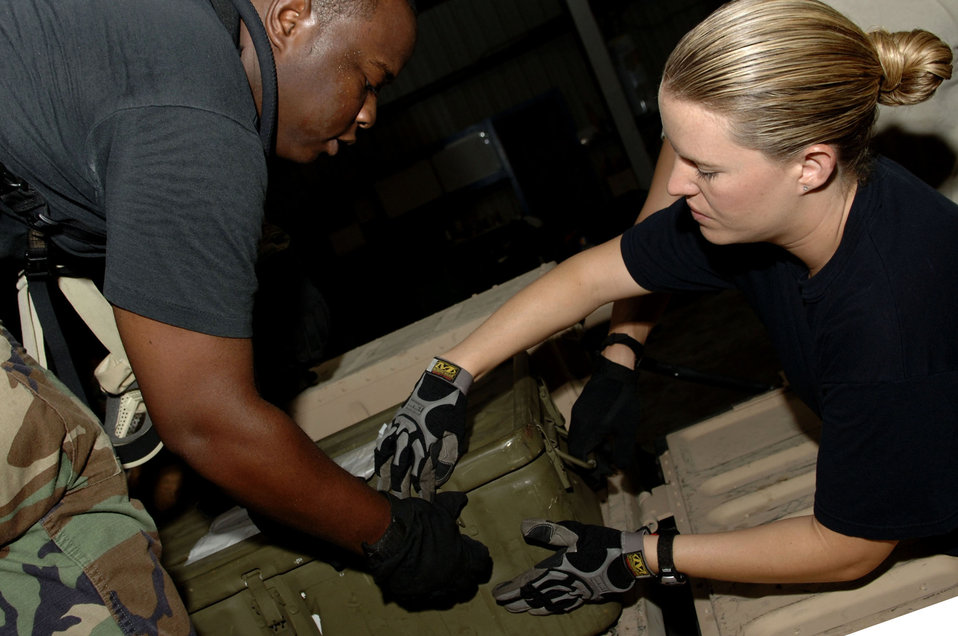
MacDill AFB medical team supports hurricane relief efforts

Senior Airman Kenneth Alexander (left) and Staff Sgt. Christine Davis unload medical supplies from a Humvee at Corpus Christi, Texas. The mobile aeromedical staging facility team deployed to Texas in support of Hurricane Ike evacuation efforts there. Sergeant Davis and Airman Alexander are both members of a MASF team from MacDill Air Force Base, Fla.